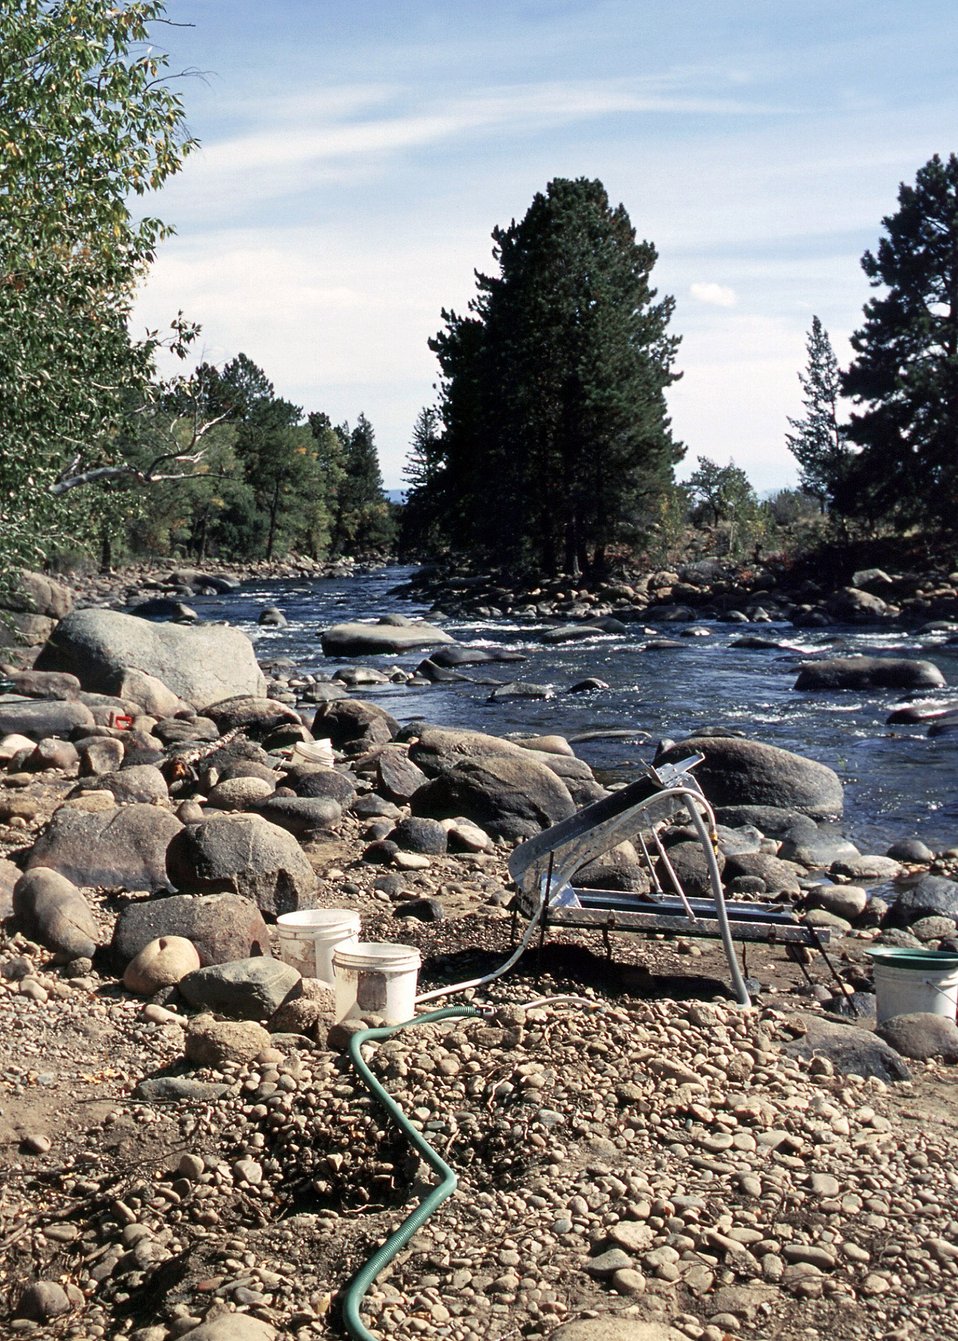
Recreational Gold Pinning